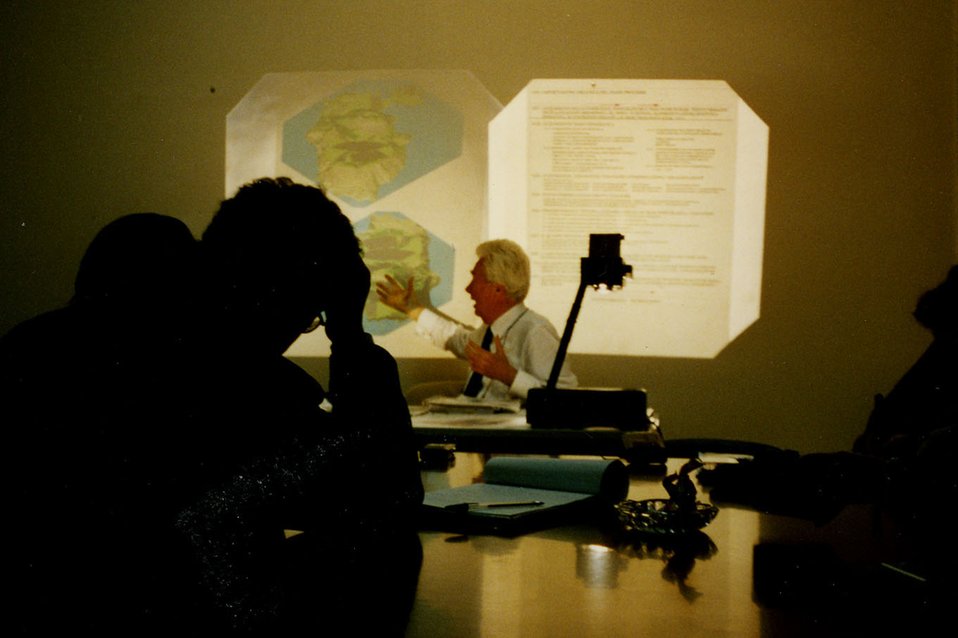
Italiano: Conferenza sulla pianificazione tenutasi presso l'Università degli studi di Palermo